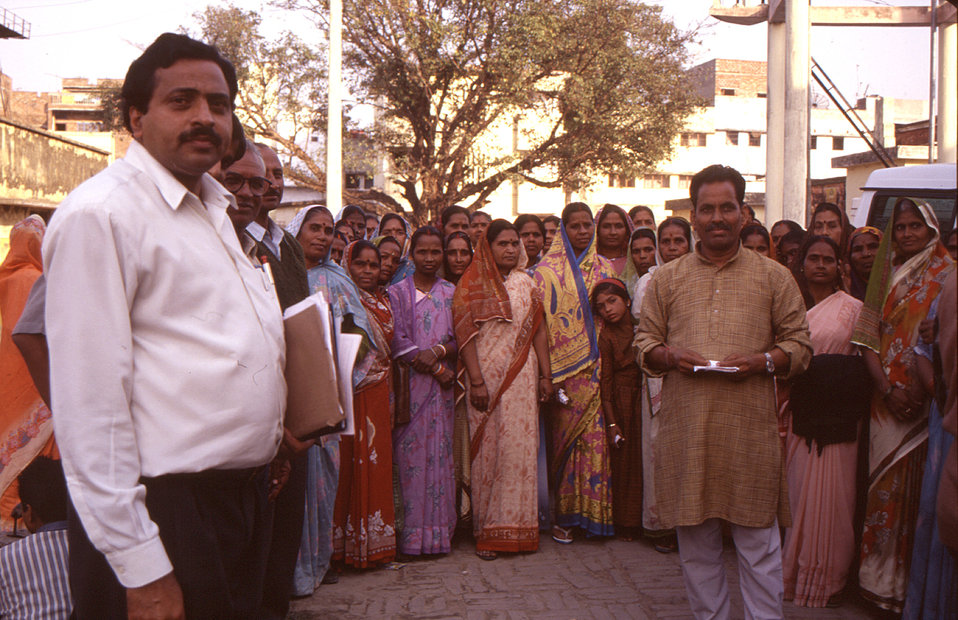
These were health workers in Gorakhpur, India as they were starting out from the District Health Office on a 2000 National Immunization Day (NID). The image was provided by Chris Zahniser, B.S.N., R.N., M.P.H., a Stop Transmission of Polio (STOP) team member and photographer, who was assigned to the state of Uttar Pradesh in northern India, and spent three months working in the Districts of Gorakhpur and Deoria.'The first STOP Team mostly consisted of CDC staff members who were U.S. citizens (22 of 25 team members). Over time, there has been a steadily increasing involvement by citizens from the world community. It is now a truly global effort with STOP Team members reflecting the international commitment to polio eradication. International bridges are being built and global connections made among public health professionals through the STOP Team initiative that will continue long after the polio virus is gone.'